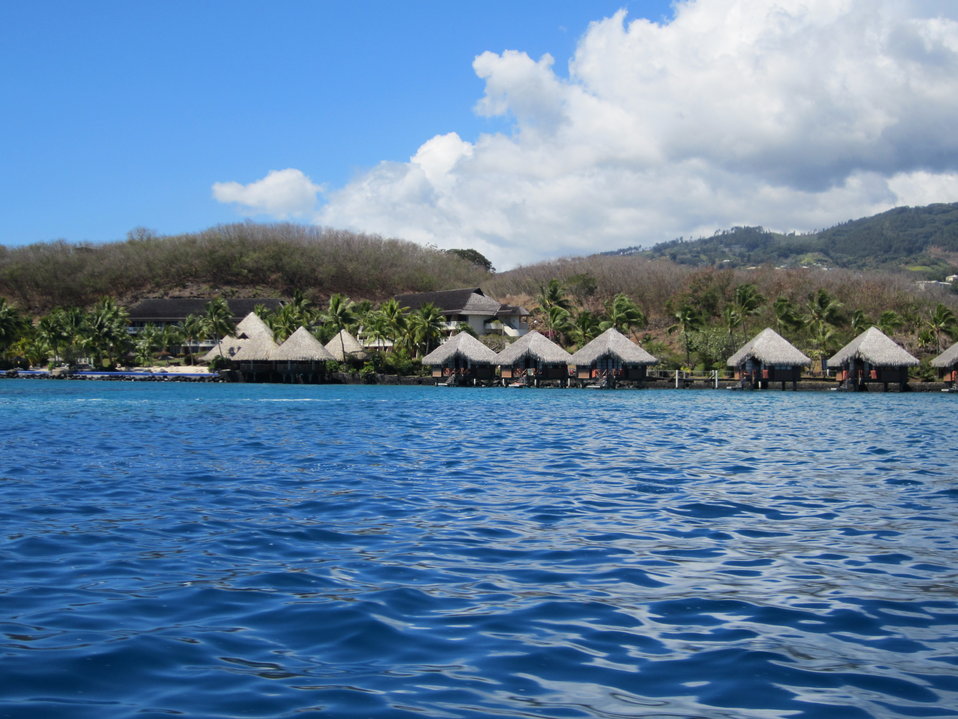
Waterside hotel